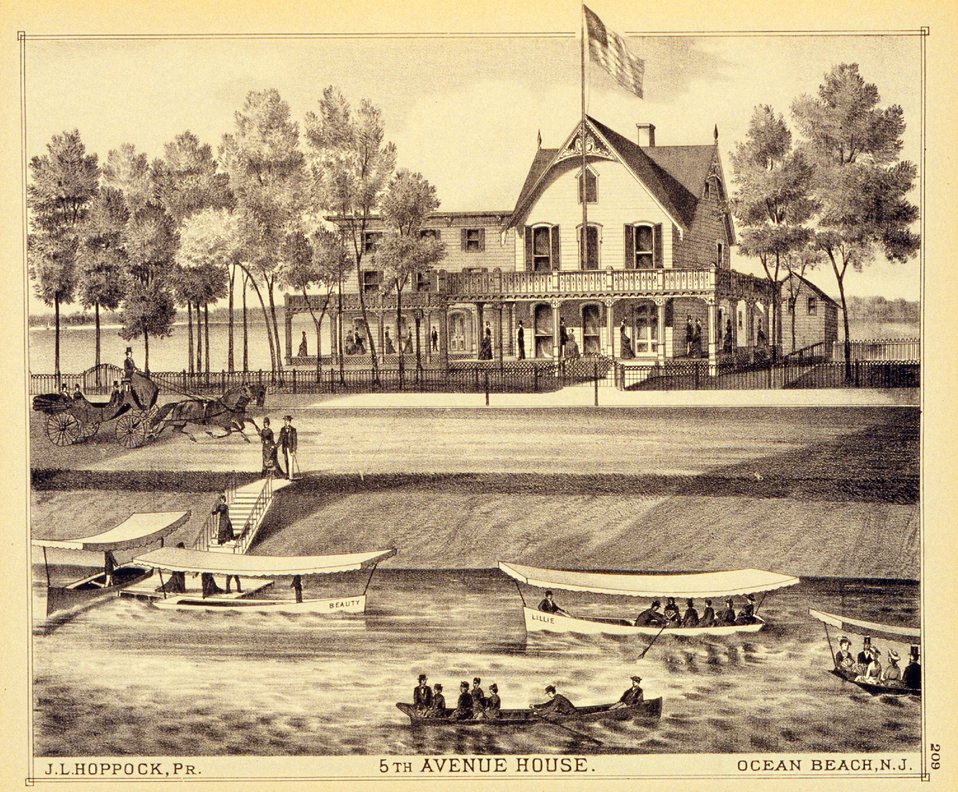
5th Avenue House, Ocean Beach, New Jersey. P. 209. 'Historical and Biographical Atlas of the New Jersey Coast,' by T. F. Rose, 1878.